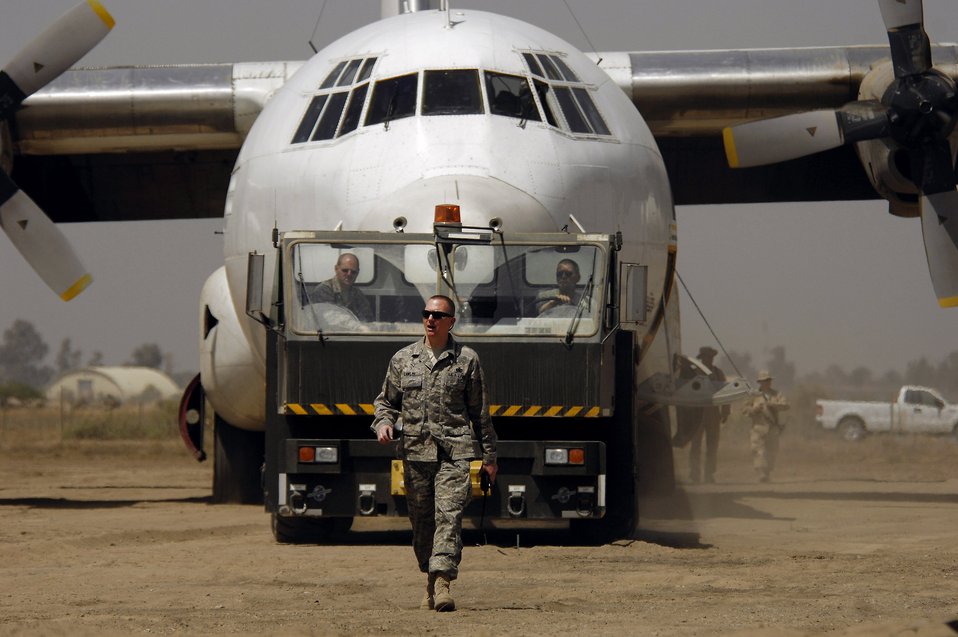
Leading the way...

Master Sgt. John Lawlor clears the area as an L-100 aircraft is towed April 1 at Baghdad International Airport. The aircraft rolled past the runway, and Airmen from Sather Air Base prepared it for towing. Sergeant Lawlor is from the 447th Expeditionary Operations Support Squadron.